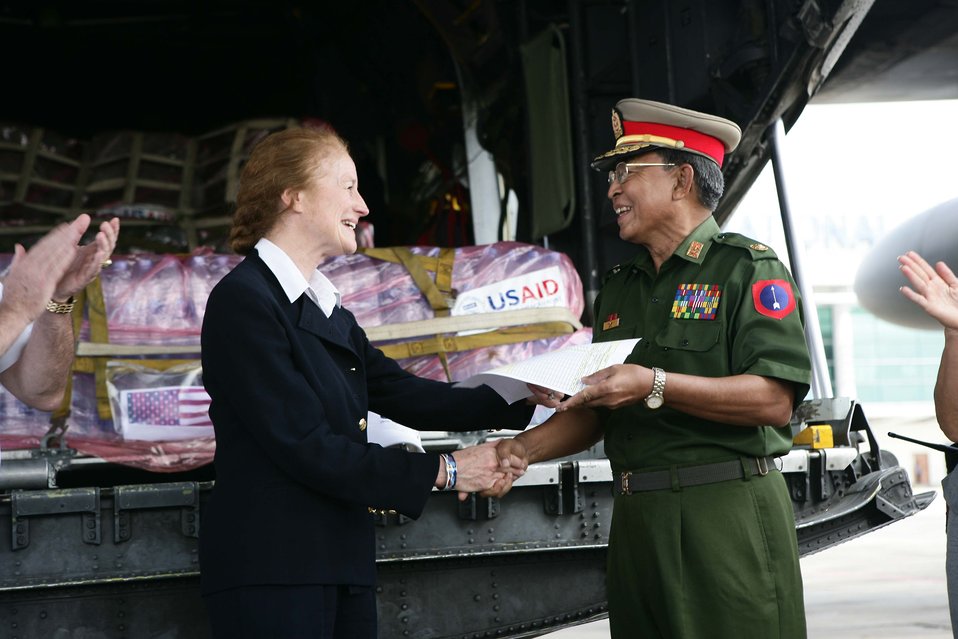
First C-130 crew provides humanitarian assistance to Burma

Henrietta H. Fore (left) meets an official at the Yangon International Airport May 12. The plane carried water, food and medical supplies to provide relief to Burma, which was struck by Cyclone Nargis May 2. Ms. Fore is an administrator for the U.S. Agency for International Development from the American People.